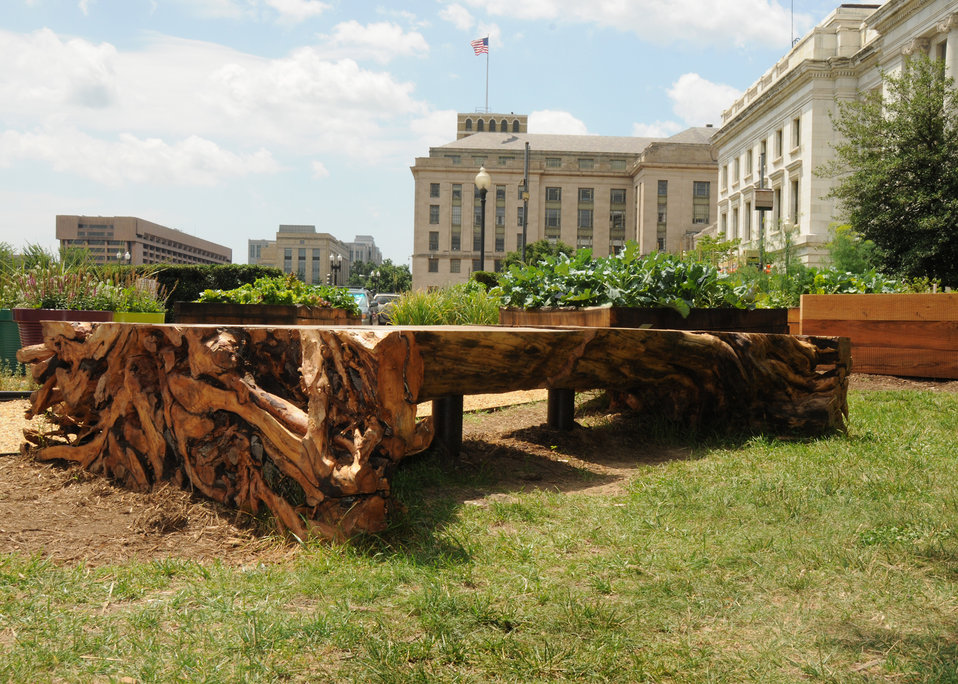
A recent addition to the Department of Agriculture’s People’s Garden in Washington, DC , are the Van Rose benches. These benches were created from a single Sugar Maple tree that overlooked a children’s garden at Cornell University, Ithaca, NY. The tree was planted at the time of the college’s founding in 1925. The tree had to be removed for a major renovation project and Professor Jack Elliot, a builder of sustainable furniture prototypes salvaged part of this historical tree. The Van Rose benches are named after the founders of the College of Human Ecology at Cornell University, Martha Van Rensselaer and Flora Rose. USDA photo 10di1383-03